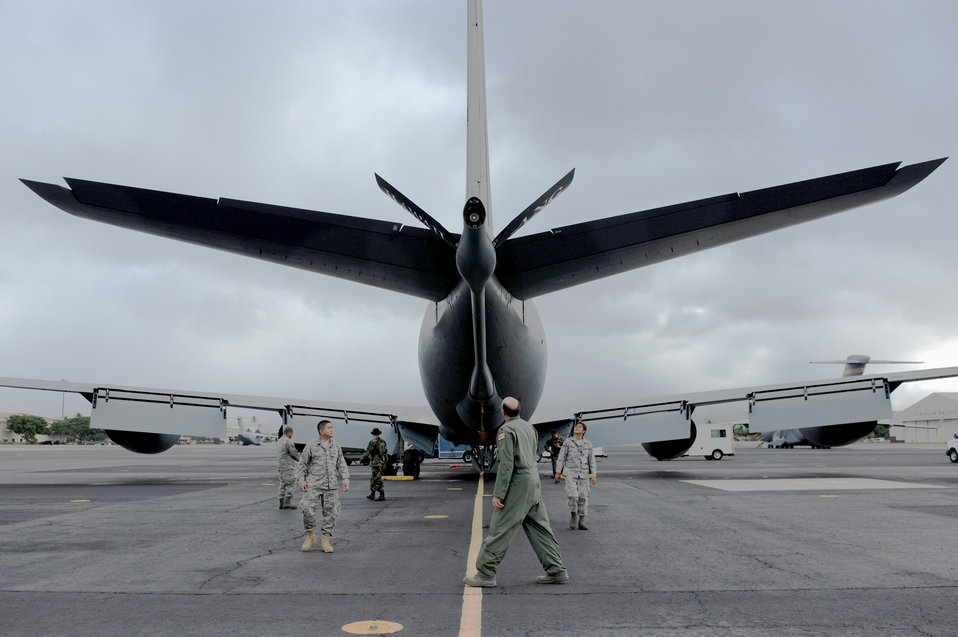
C-17 refuels over the Pacific

Lt. Col. Gene Feller goes through a pre-flight inspection with members of the maintenance crew before a Total Force refueling mission Sept. 18, 2010, at Joint Base Pearl Harbor-Hickam, Hawaii. Colonel Feller is a pilot with the 203rd Air Refueling Squadron.